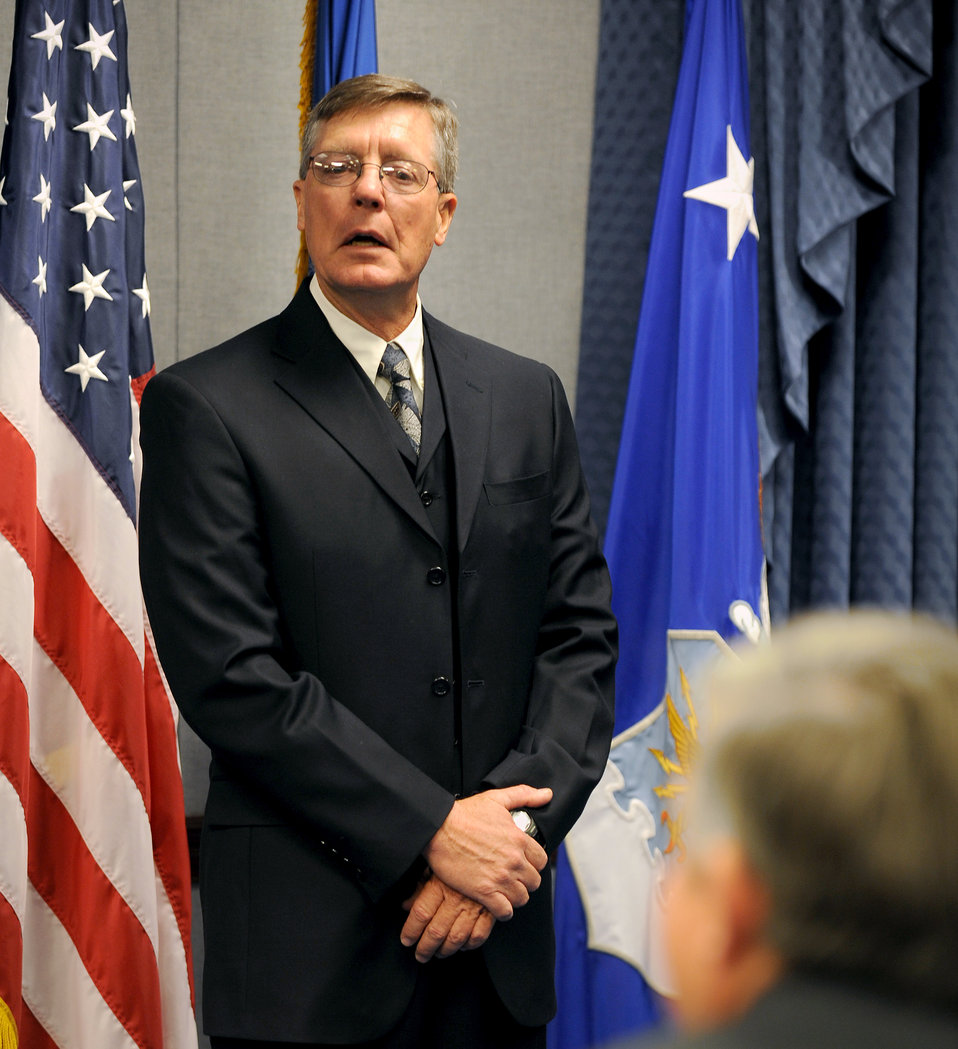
Holloman scientist receives Harold Brown Award

Dr. Michael Hooser, the recipient of the 2011 Harold Brown Award, addresses the audience during a ceremony held in his honor at the Pentagon, Washington, D.C., Dec. 12, 2011. A chief scientist from Holloman Air Force Base, N.M., Hooser received the award for his role in significant advances in hypersonic missile research.